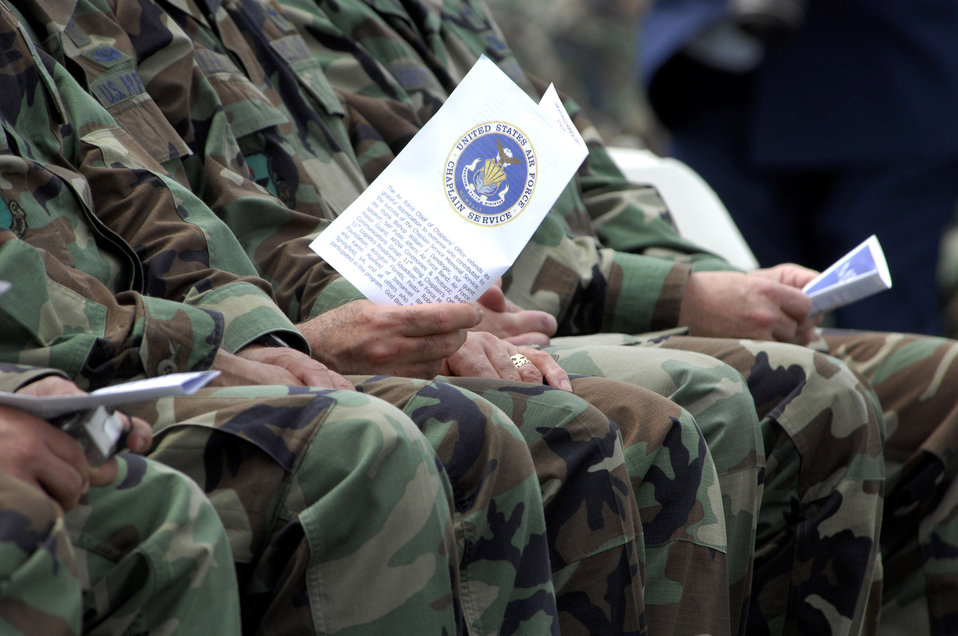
Air Force chaplains join together for memorial service

Nearly 300 Air Force chaplains and chaplain's assistants from around the globe joined together April 25 beneath the spires of the Air Force Memorial in Arlington, Va., for a special wreath-laying ceremony in honor and in memory of Air Force chaplains and chaplain's assistants who have served.